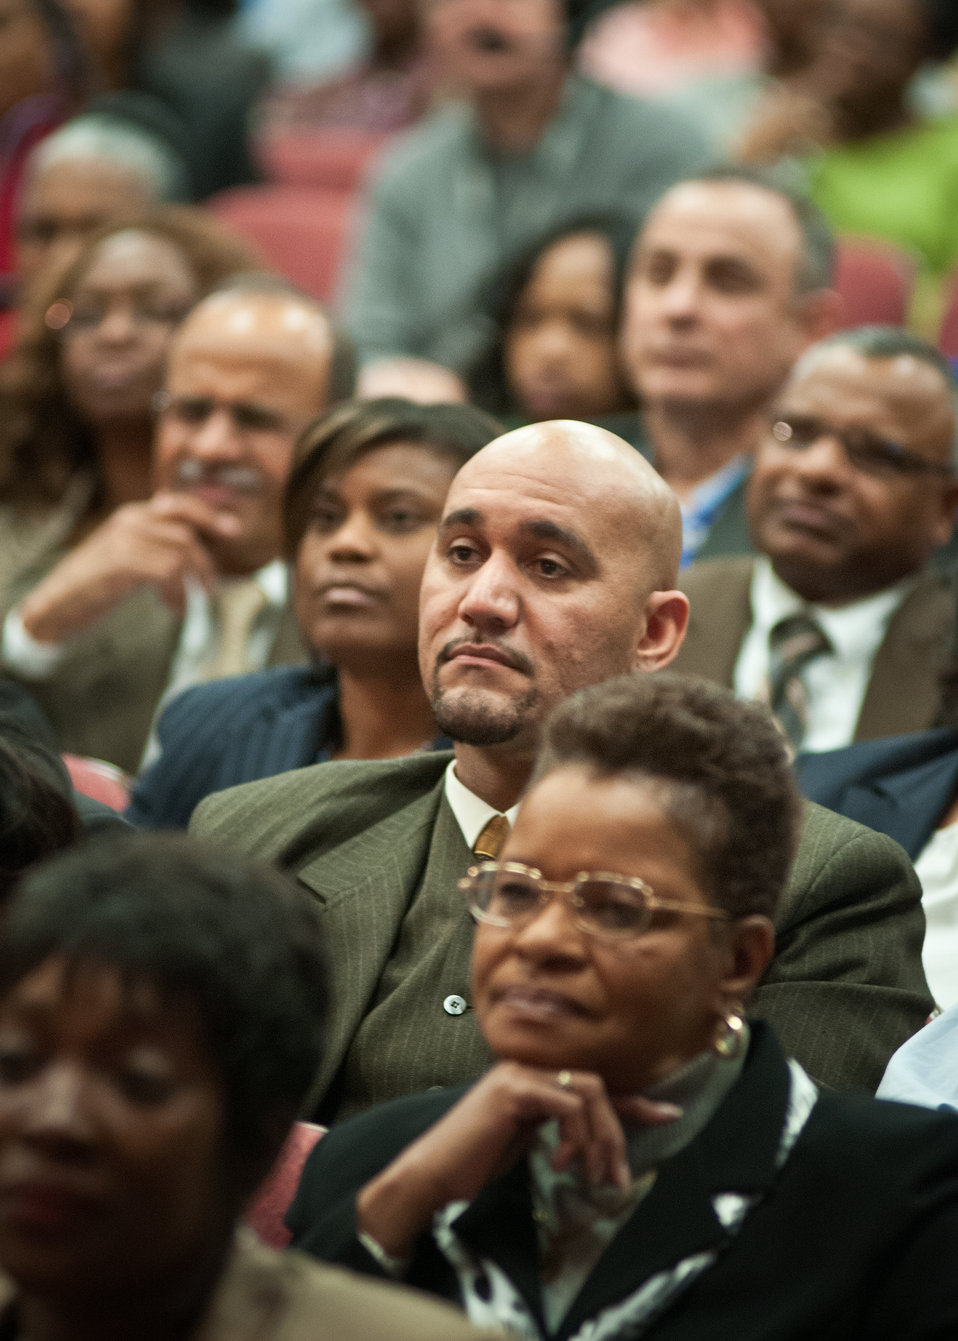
Vincent Loran, Food and Nutrition Service listens to Tim Reid, Actor, Comedian, Filmmaker and Social Activist the guest speaker at the United States Department of Agriculture Black History Month celebration “Black Women in American Culture and History” in Washington, D.C. on Thursday, February 16, 2012.